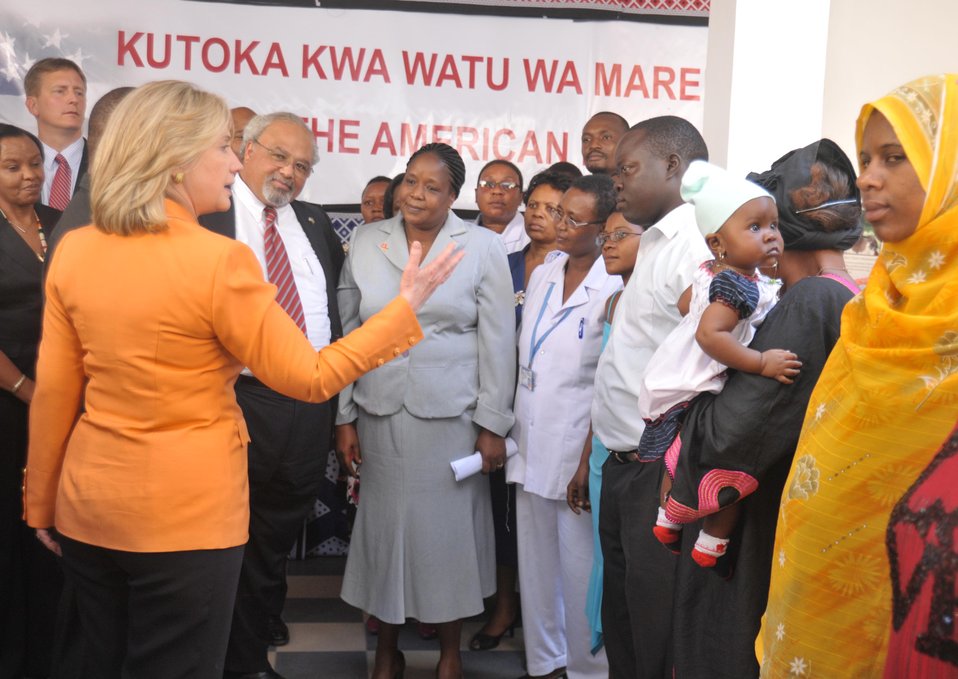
Secretary Clinton and Ambassador Goosby Meet With Patients and Health Workers

U.S. Secretary of State Hillary Rodham Clinton and Ambassador Eric Goosby, U.S. Global AIDS Coordinator, meet with patients and health workers, at the Buguruni Health Center in Dar es Salaam, Tanzania, on June 12, 2011.